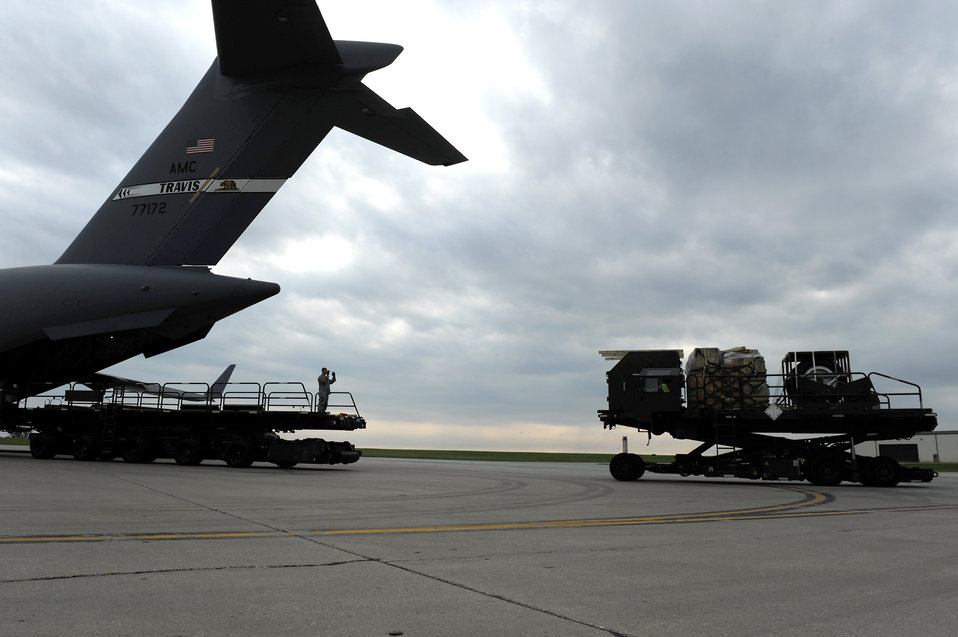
B-52s head to Guam

Airmen from the 5th Logistics Readiness Squadron load pallets of equipment onto a C-17 Globemaster III out of Travis Air Force Base, Calif., during deployment preparation May 27, 2010, at Minot Air Force Base, N.D. Airmen from the 5th Bomb Wing are preparing to deploy to Andersen Air Force Base, Guam, in support of U.S. Pacific Command's continuous bomber presence in the Asia-Pacific region.